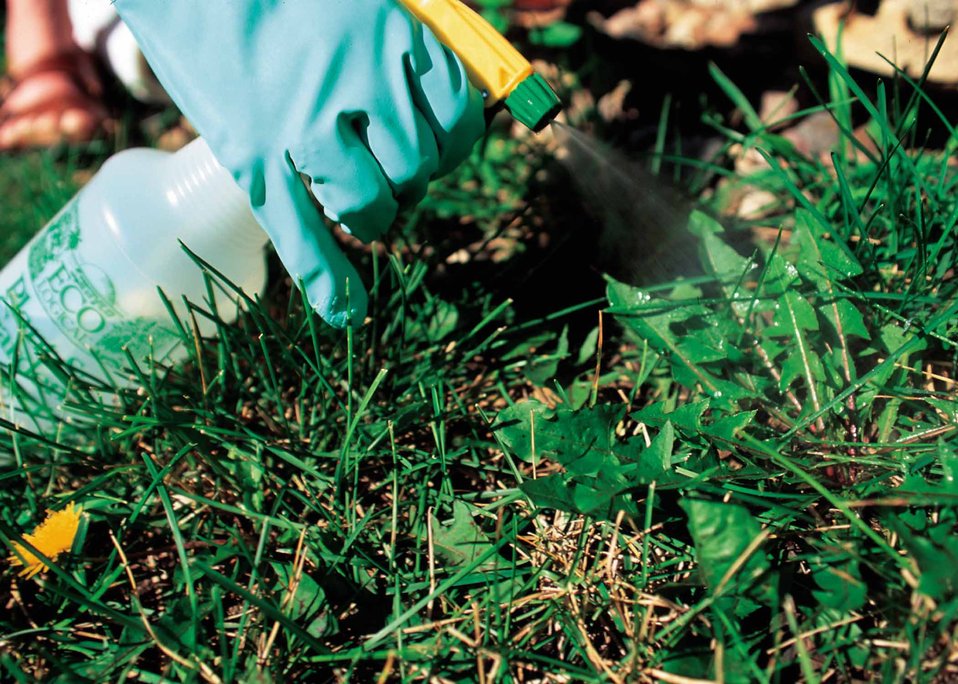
Spot spraying problem weeds is the preferred method of weed control rather than general application of pesticides over the entire yard. Spot spraying is a practice also used on farms.